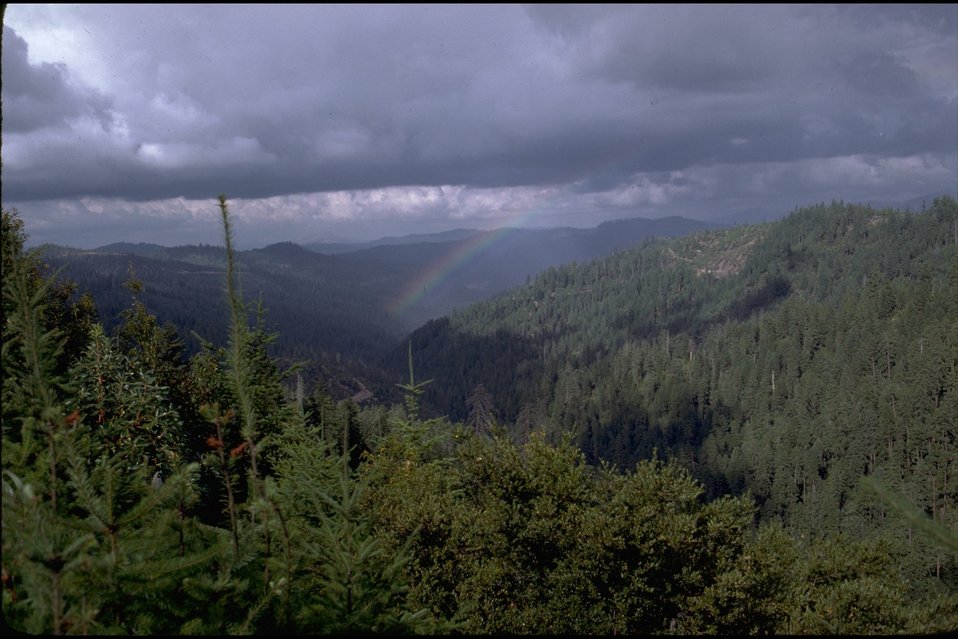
Rogue River; farshot of rainbow in mountains.